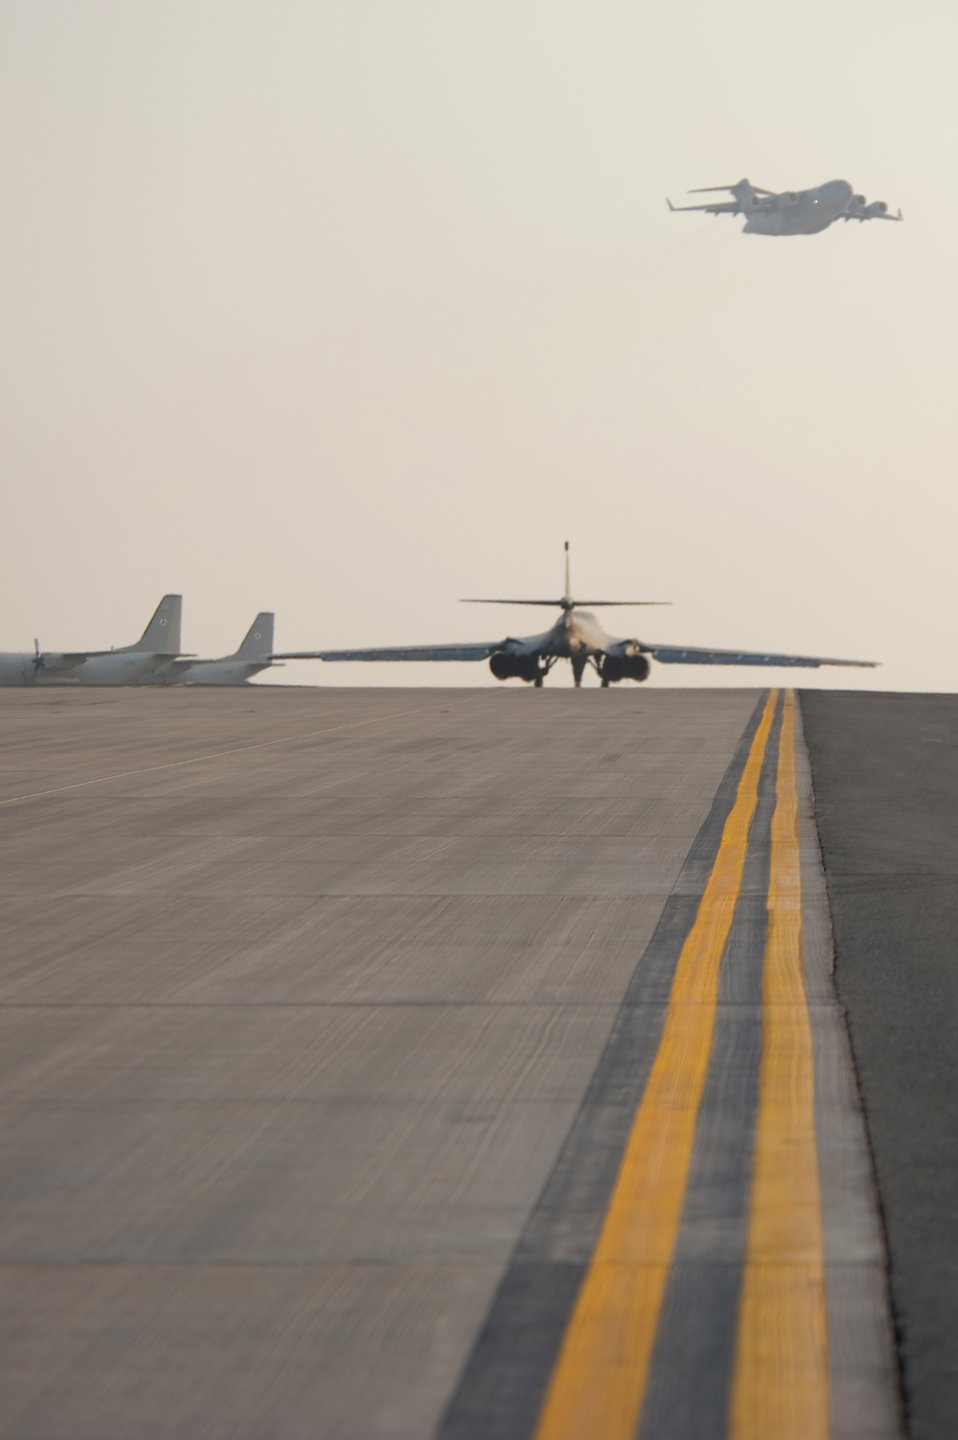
Checking out the B-1B for combat

While a C-17 Globemaster III flies overhead, a B1-B Lancer taxis on a runway ready to take-off on a combat mission Nov. 11, 2009, at an air base in Southwest Asia. Carrying the largest payload of guided and unguided weapons in the Air Force inventory, the multi-mission B-1 is the backbone of America's long-range bomber force.